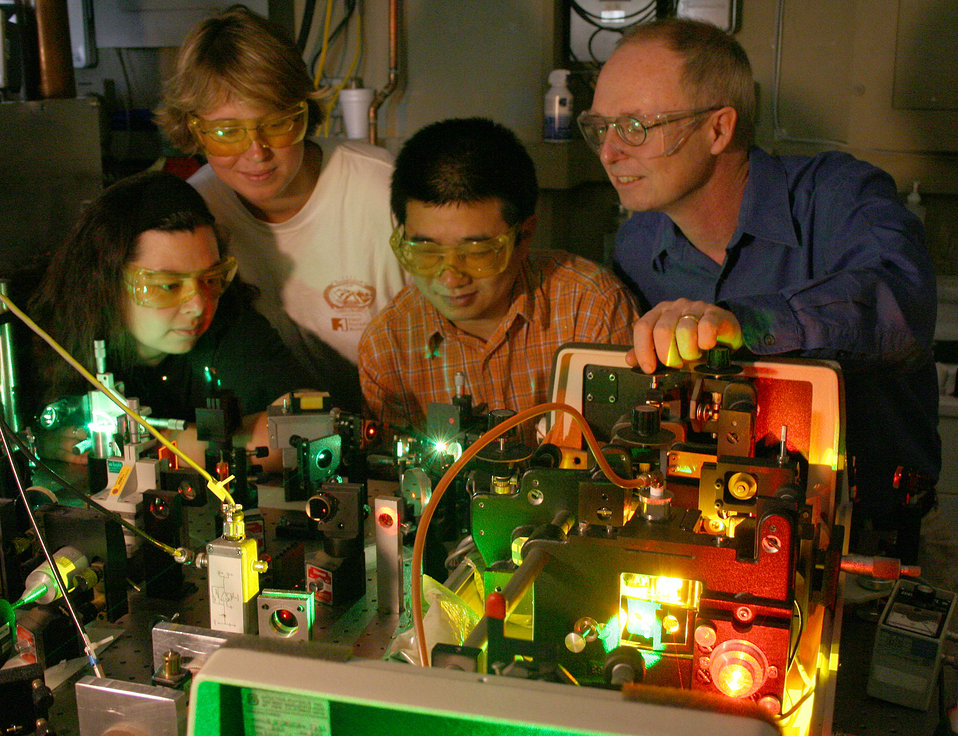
Experiments Help Explain Floppy Space Molecule

A research team at JILA has developed a new method for making and analyzing an unusual floppy molecule. Shown above with their experimental apparatus are (from left) Chandra Savage, Erin Whitney, Feng Dong, and David Nesbitt.